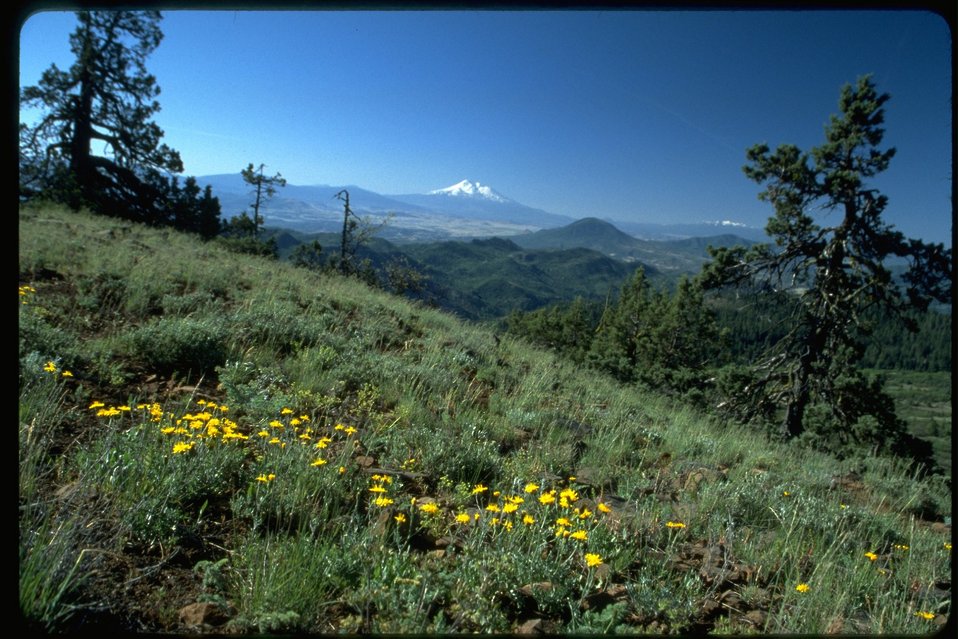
Mt. Shasta from Pilot Rock with wildflower and phlox site, Cascade-Siskiyou National Monument (CSNM).